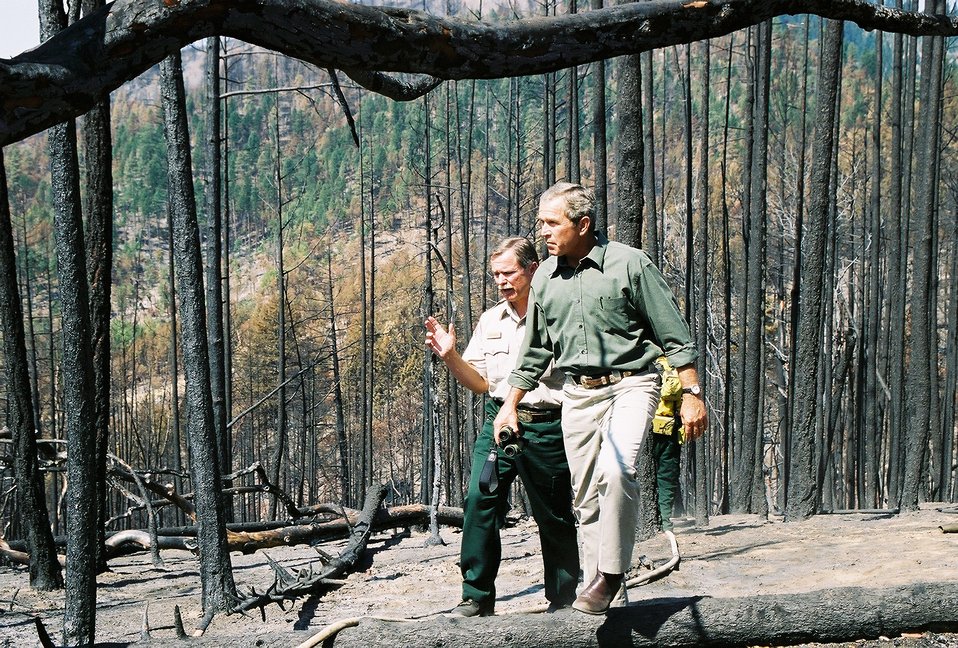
At the Squires fire, President Bush and Ron Wenker, BLM Medford District Manager walk through an unthinned burned area. August 22, 2002 Photo John Craig